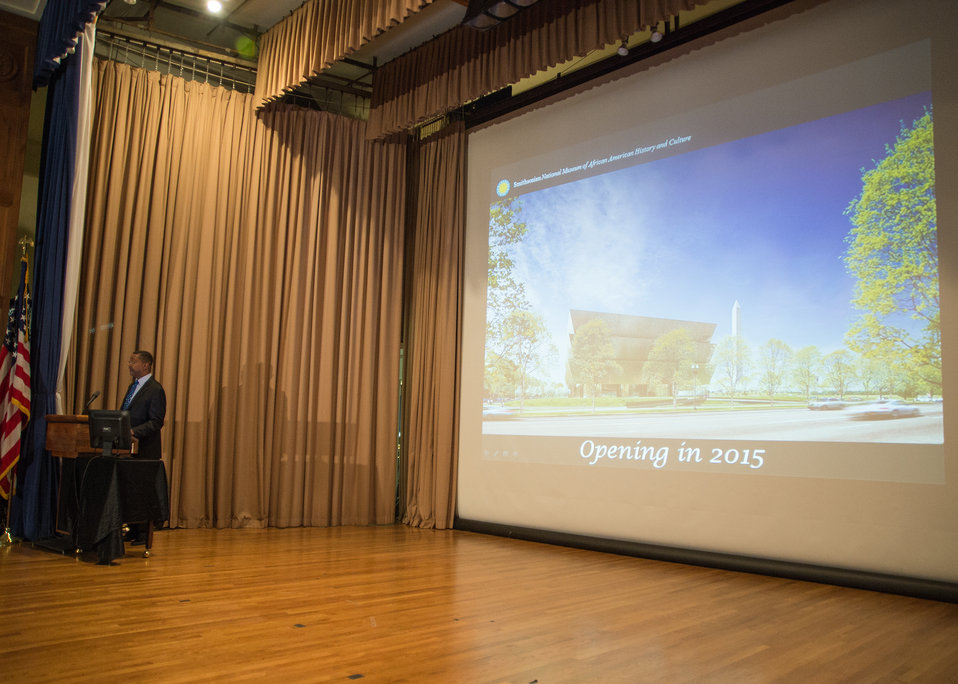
Smithsonian National Museum of African American History and Culture Partnerships and International Programs Director John W. Franklin is the keynote speaker at the U.S. Department of Agriculture's (USDA) Dr. Martin Luther King Jr. and National Service Day in Washington, D.C. on Wednesday, Jan. 15, 2014. The Smithsonian National Museum of African American History and Culture will be the 19th of the Smithsonian Institution.